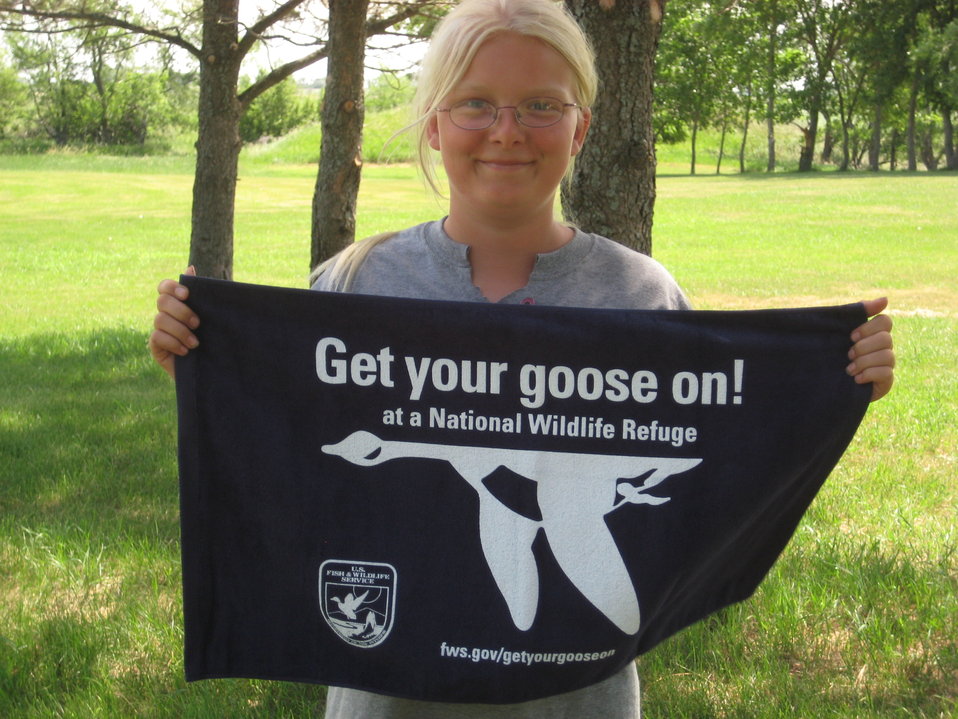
Get Your Goose On!

Taken at Tewaukon National Wildlife Refuge.